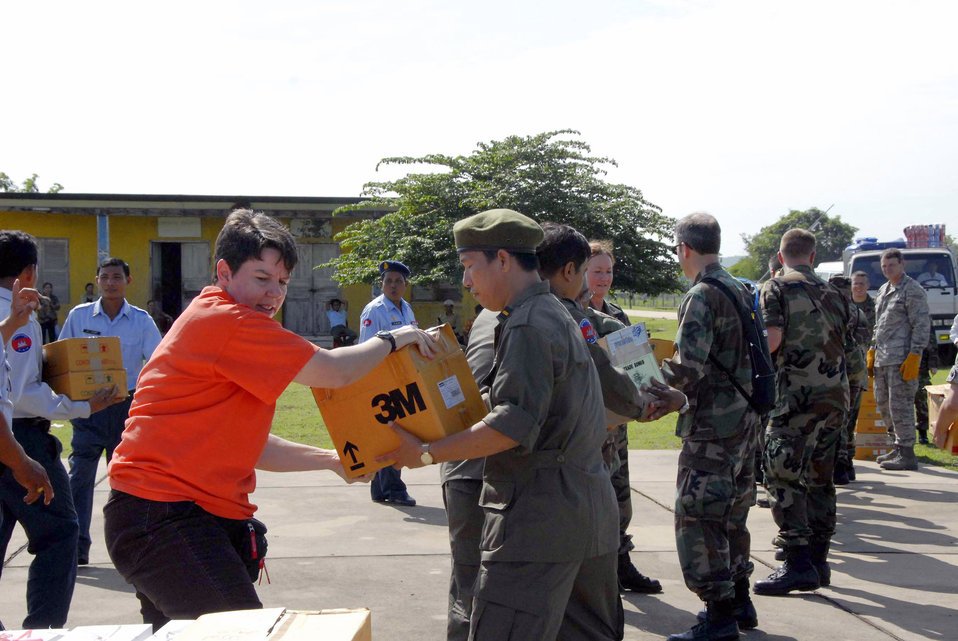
Cambodian relief

Master Sgt. Tracy Lewis (left) hands off a box of medical supplies to Cambodian Lt. Col. Mark Sophai May 24 at Kampong Chhnang Province Airfield, Cambodia. Multinational medical teams distributed the supplies to forward-operating locations for Operation Pacific Angel. The operation is a joint/combined humanitarian assistance operation in support of capacity-building efforts. Participating services include the active duty, Reserve and National Guard components of the Air Force, Army, Royal Thai air force, and Royal Cambodian armed forces. Sergeant Lews is assigned to the from Pacific Air Forces International Heath Alliance, and Colonel Sophai is a doctor with the Royal Cambodian armed forces.